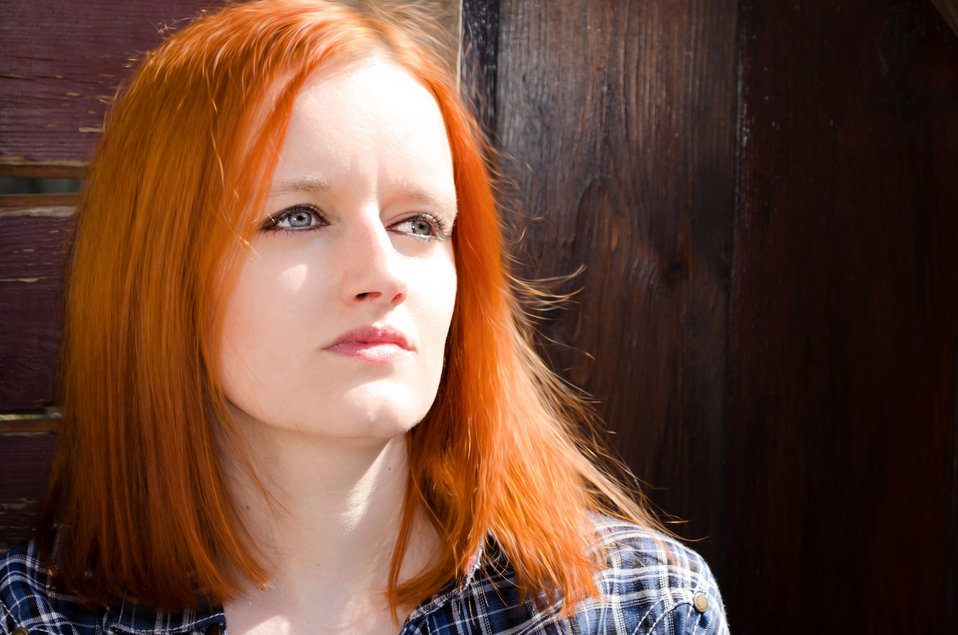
Woman - portrait.